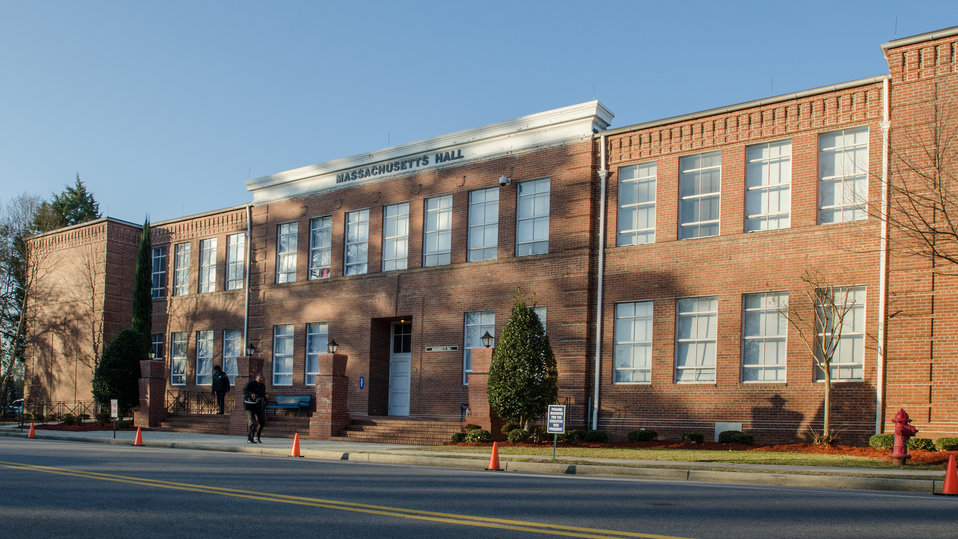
U.S. Department of Agriculture's (USDA) Strike Force for Rural Growth and Opportunity event was held at Voorhees College in Denmark, SC, on Tuesday, Mar. 26, 2013. The primary goal of the StrikeForce initiative is to increase partnership with rural communities and leverage community resources in targeted, persistent poverty areas. Vilsack noted that through the StrikeForce initiative, USDA will do more to partner with local and state governments and community organizations on projects that promote economic development and job creation.